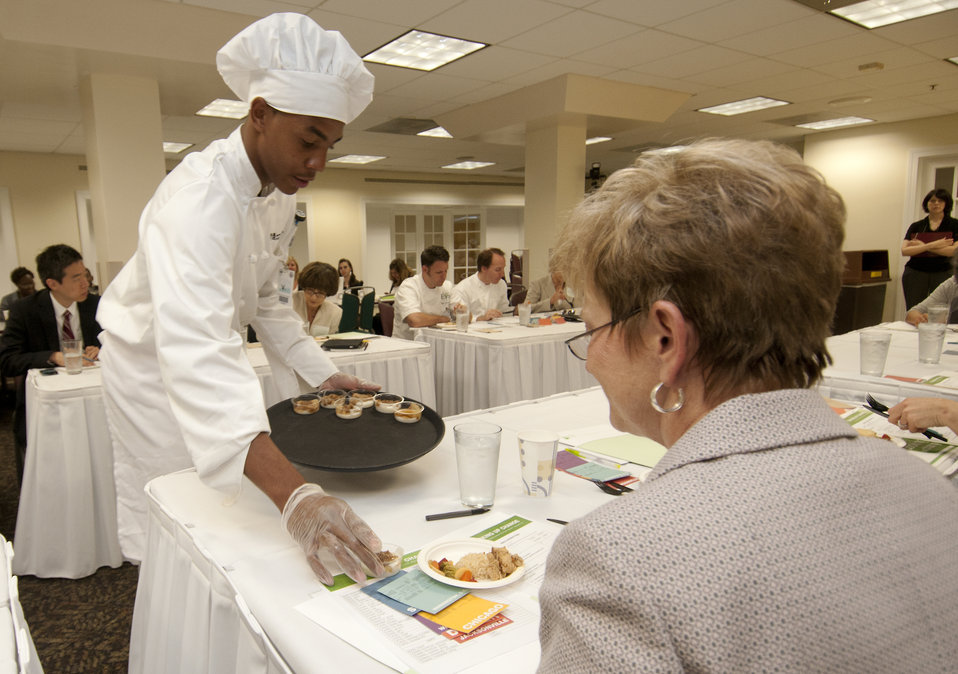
Agriculture Deputy Under Secretary for Food, Nutrition and Consumer Services, Janey Thornton receives a food submission from Washington, DC Public Schools student chef Victor Rogers at the Cooking Up Change, National Healthy Cooking Competition at the USDA in Washington, DC on Monday, May 23, 2011.